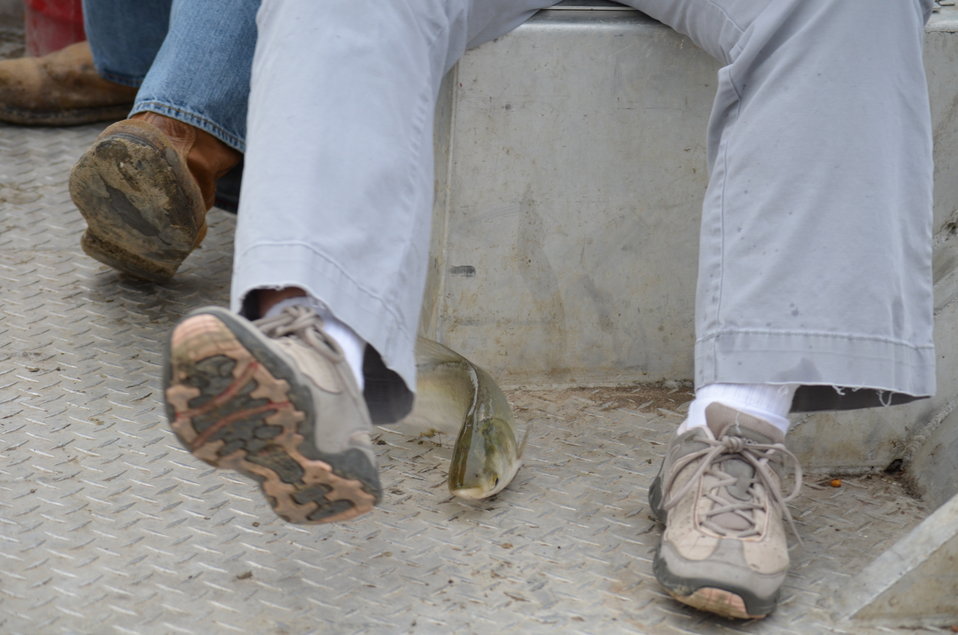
Carp in a boat

Jumping silver carp find their way into the boat. USFWS/Ashley Spratt